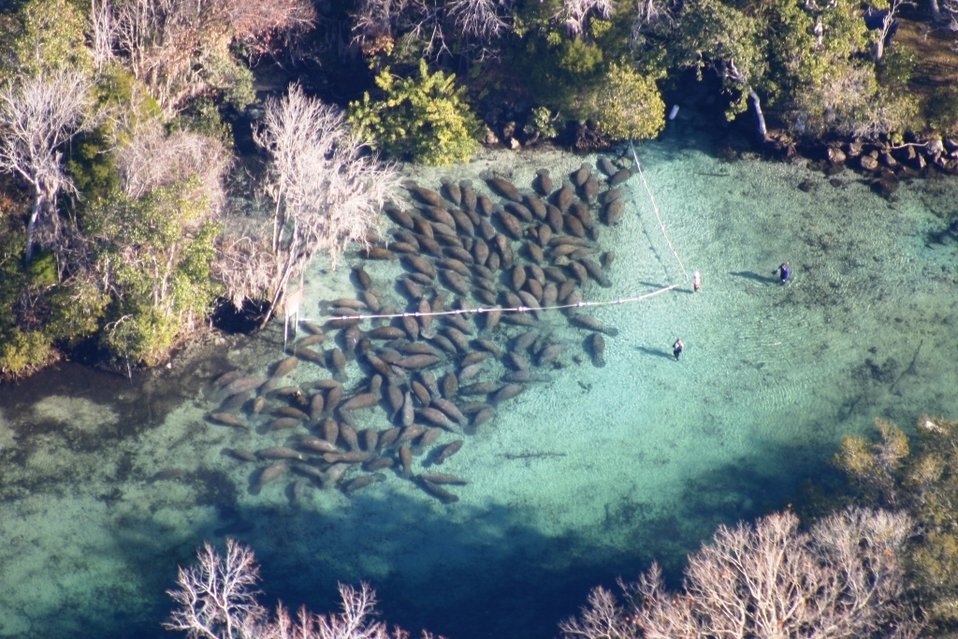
Crystal River NWR manatees

Endangered manatees congregate around the warm springs in Crystal River National Wildlife Refuge in Florida. Some areas are roped off for their protection. (USFWS)